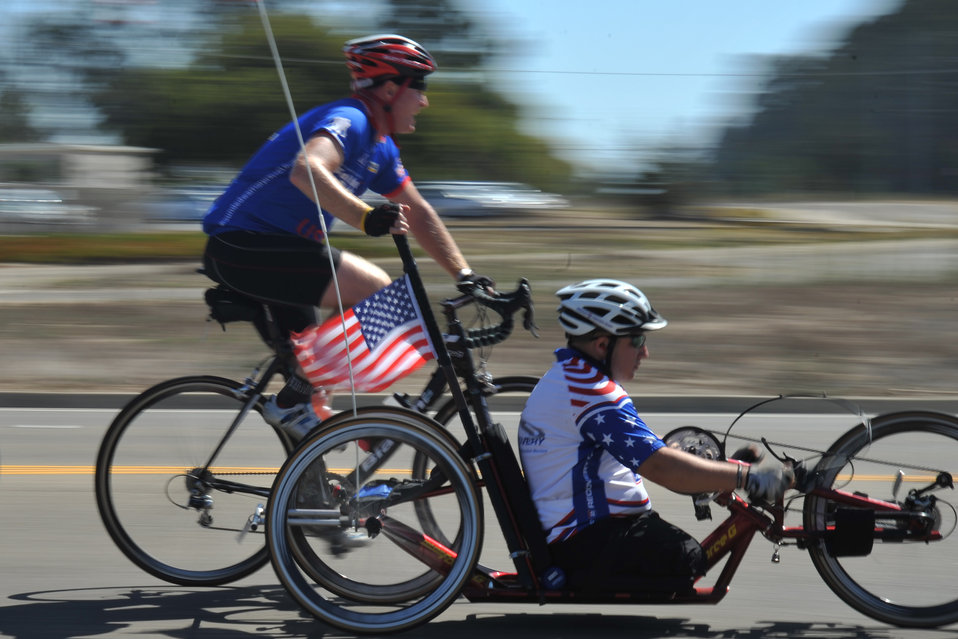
Rolling, rolling, rolling

Wounded warriors cycle their way through Vandenberg Air Force Base, Calif., Oct. 8, 2009. The participants are going to cycle about 480 miles for the Ride-2-Recovery Golden State Challenge, a seven-day cycling event from San Francisco to Los Angeles.